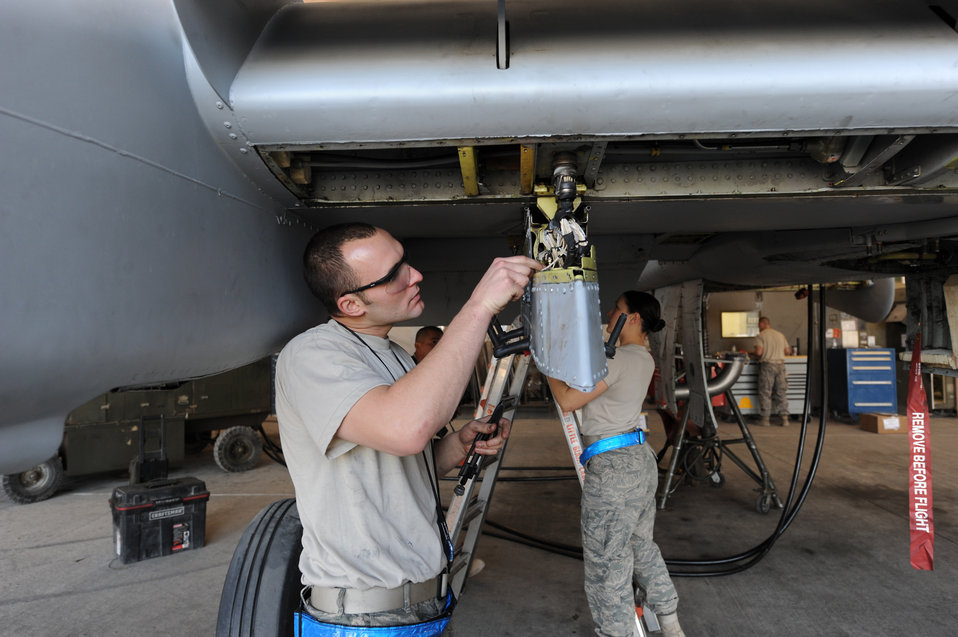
A-10s at Kandahar

Staff Sgt. Ryan Vandenbrand and Senior Airman Sophia Ramallo, both with the 451st Expeditionary Maintenance Squadron at Kandahar Airfield, Afghanistan, inspect an A-10 Thunderbolt II Dec. 27, 2009. The A-10 is specifically designed to provide close-air support for U.S. and coalition ground forces.